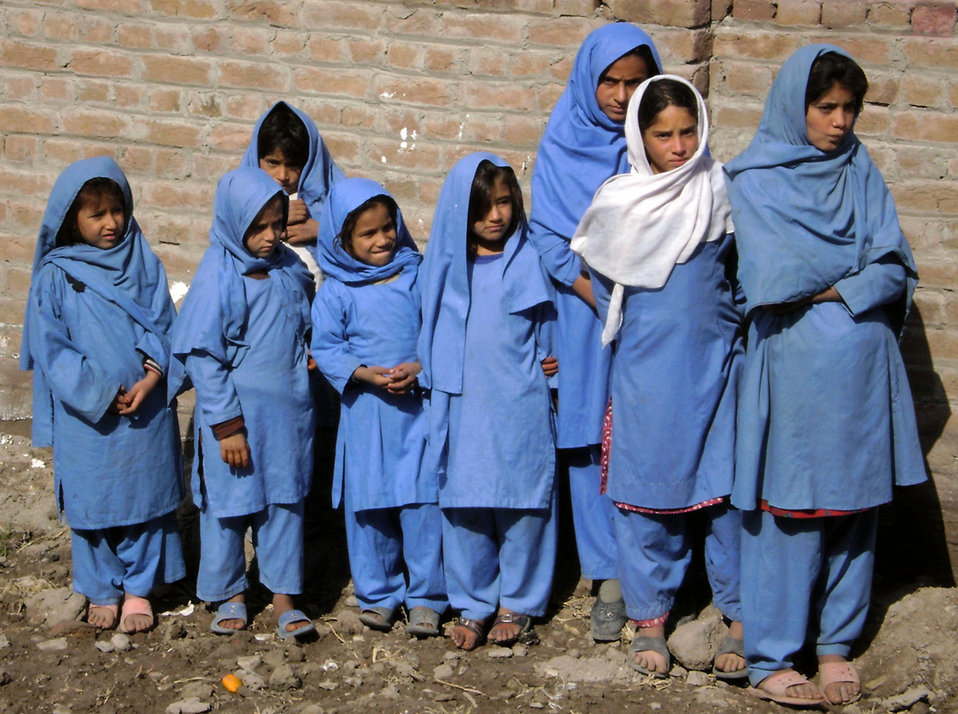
Servicemembers provide medical care to 120 Afghans

A group of school girls waits to be seen by American medics Feb. 24 at the Hope of Mother Clinic in the Surkh Rod District of Afghanistan's Nangarhar province.